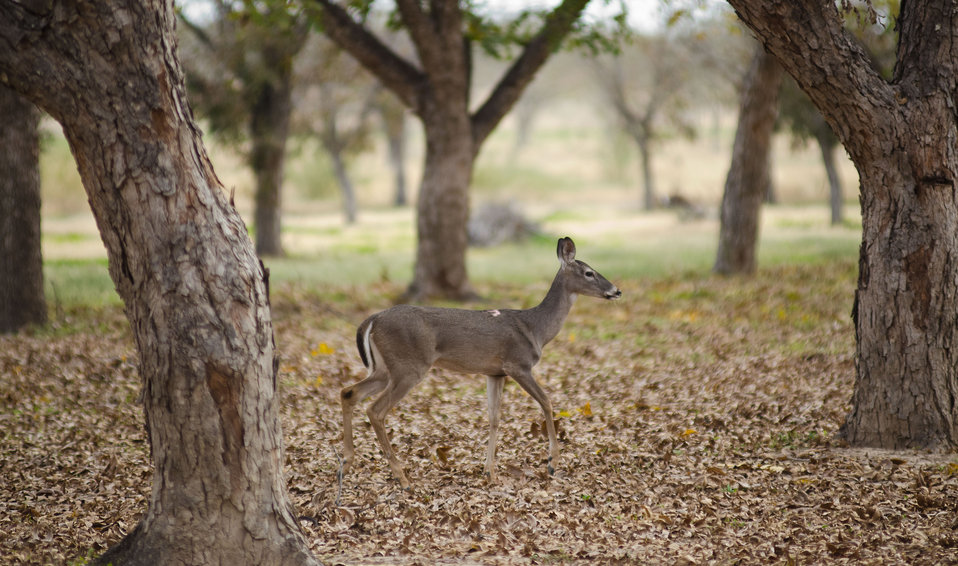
Wild deer at Arrowhead Farms of Crystal City, TX, on Friday, December 9, 2011, owned by Mr. Akram Mohammad, a pecan farmer since 2005. The 719 acre farm with 10,000 trees, features some orchards with underground micro irrigation system that feeds water to the roots of 4,380 pecan trees on 146 acres. Mr. Mohammad said, “USDA (U.S. Department of Agriculture) was essential to my business and trees surviving the recent exceptional drought. The trees were stress free thanks to underground micro-irrigation. This is essential to the future growth of Texas agriculture and good for America.” U.S. Department of Agriculture’s (USDA) Environmental Quality Initiative Program (EQIP) awarded Mr. Mohammad a $130,000 grant in 2008. He provided $26,000 for the balance of the $156,000 total cost to install a 146-acre underground micro-irrigation for 4,380 trees.